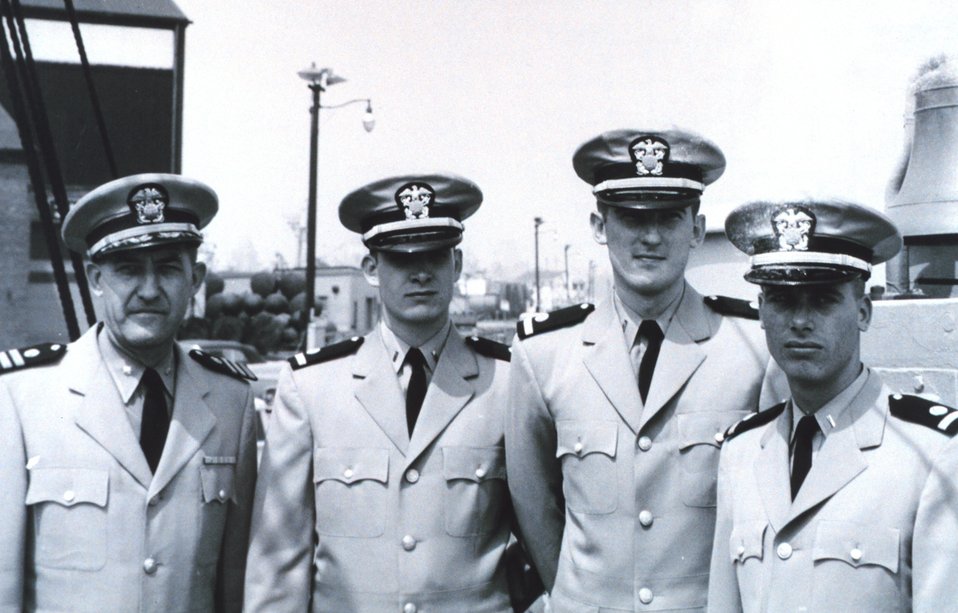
First modern C&GS Officer Training Class on board the C&GS Ship EXPLORER, June 20, 1960. L to R - Commander Raymond M. Stone, training officer, Ensign R. Lawrence Swanson, Ensign Bernard F. Karwisch, and Ensign Paul W. Hund, Jr. This first modern training class ran from April through June and consisted of 6 trainees.